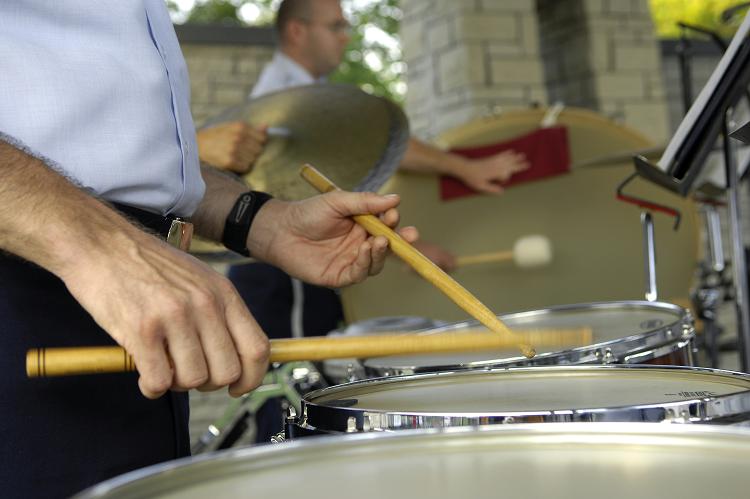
Air Force Week St. Louis

Percussionist, Tech Sgt. Paul Shaw, plays a drum as the U.S. Air Force Band of Mid-America plays for the crowd at the Jefferson Barrack Blast, July 3, 2007. St. Louis County, in partnership with the Air Force during Air Force Week, put on the blast, entertaining the more than 20,000 in attendance.